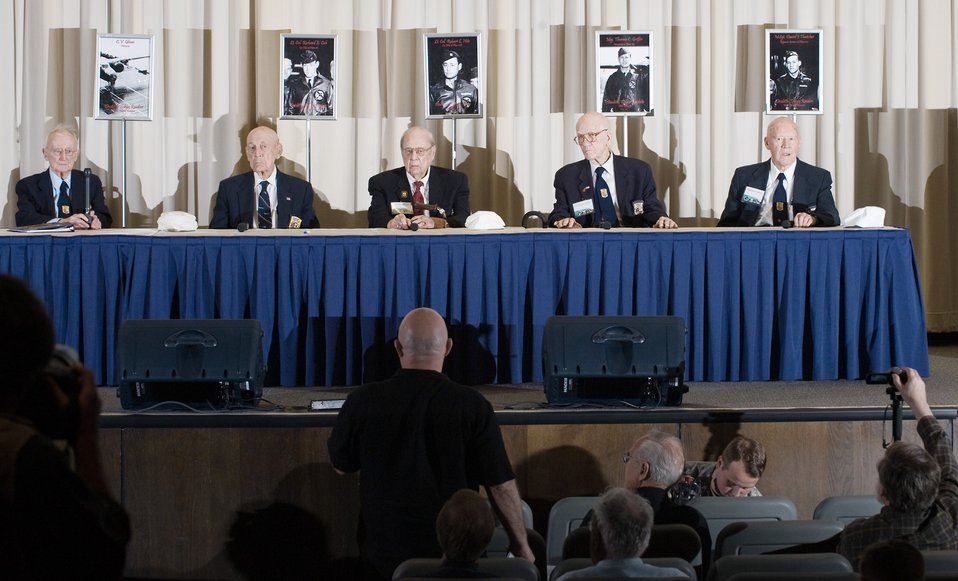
Doolittle Raiders 68th reunion

C.V. Glines (far left), Doolittle Raiders historian and author, moderates a question and answer session between news media and Doolittle Raiders April 16, 2010, at the National Museum of the U.S. Air Force at Wright-Patterson Air Force Base, Ohio. Answering questions were (left to right) Lt. Col. Richard E. Cole, Lt. Col. Robert L. Hite, Maj. Thomas Griffin and Master Sgt. David J. Thatcher.